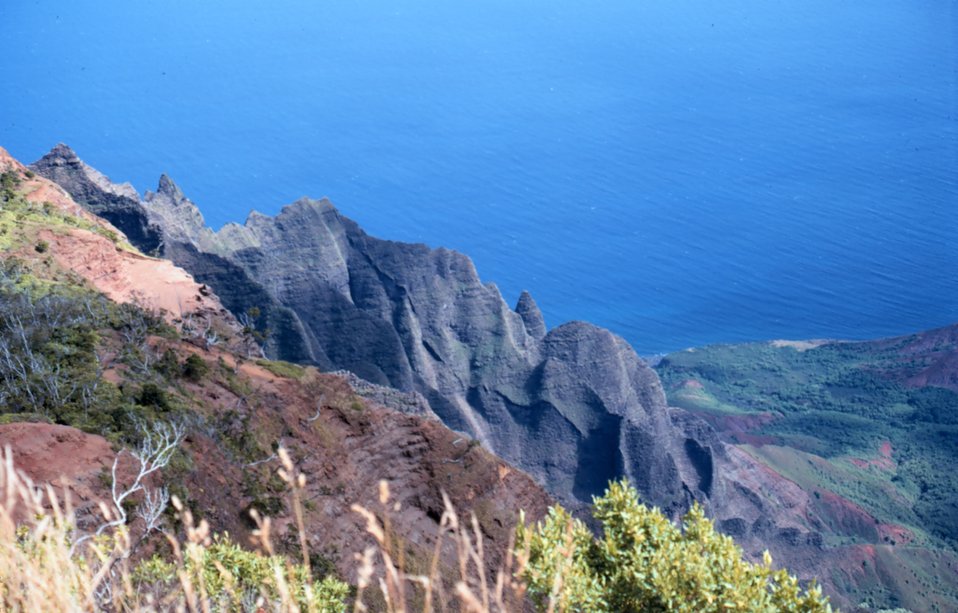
A knife-edge ridge on Kauai on the Na Pali coast.